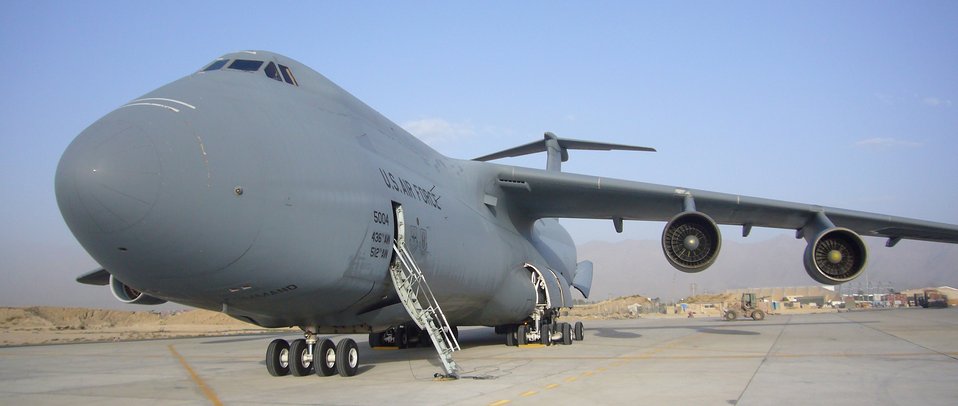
C-5 lands at Bagram, opens galaxy of capabilities

A C-5 Galaxy lands at Bagram Air Base, Afghanistan, without interruption to flight operations for the first time Sept. 22.